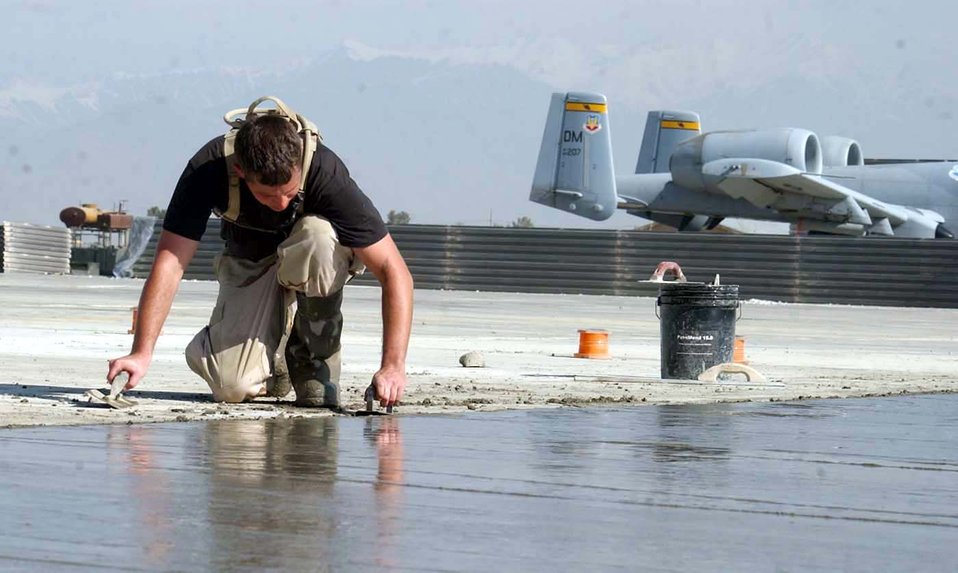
Cutting edges

BAGRAM AIR BASE, Afghanistan -- Staff Sgt. Gregory Lund edges newly poured concrete on an A-10 Thunderbolt II parking ramp here. He is a civil engineer with the 455th Expeditionary Operations. In the past two weeks, civil engineers here have been building revetments, painting taxiway and parking ramp lines, laying new hangar foundations, and breaking up and laying concrete to expand and improve the flightline.